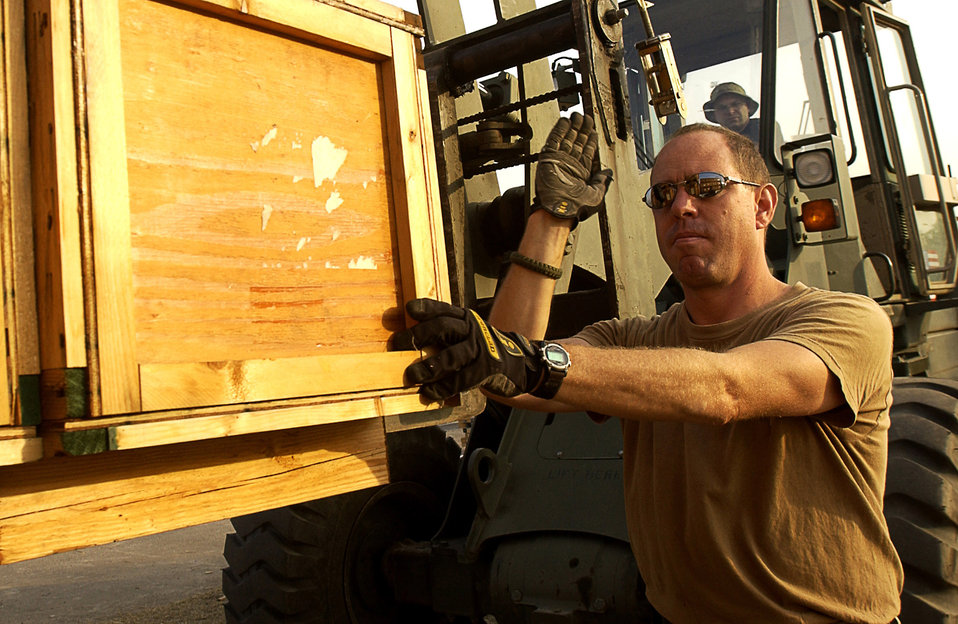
Pakistan relief

CHAKLALA AIR BASE, Pakistan (AFPN) -- Master Sgt. Perry O'Brien directs a pallet onto a truck here in support of Pakistan earthquake-relief efforts. The pallet was loaded Oct. 26 and will eventually end up in Pakistan in support of earthquake victims there. Sergeant O'Brien is from the 818th Contingency Response Group at McGuire Air Force Base, N.J.